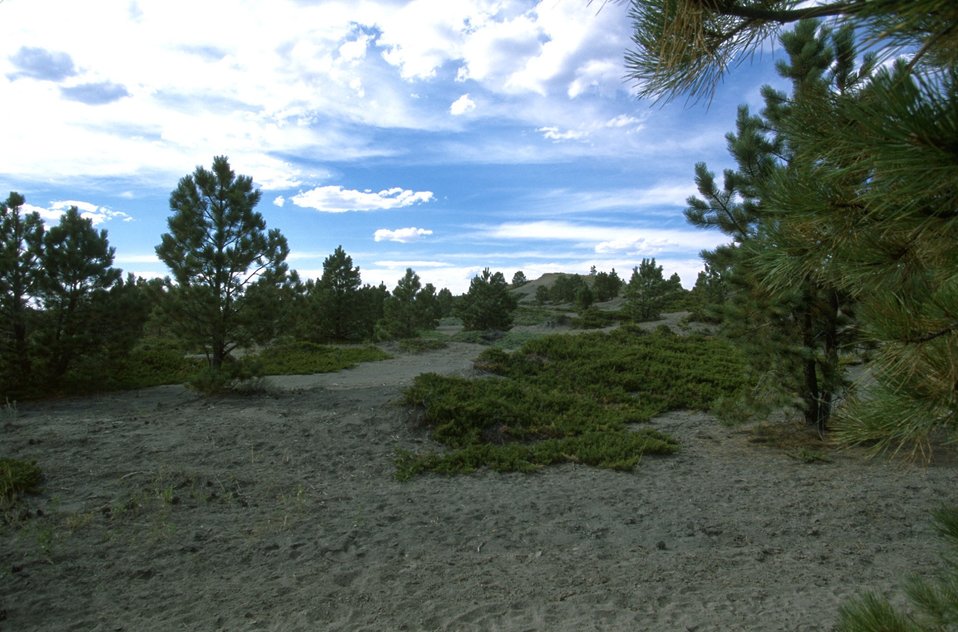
Acid Shale Area of Critical Environmental Concern (ACEC)